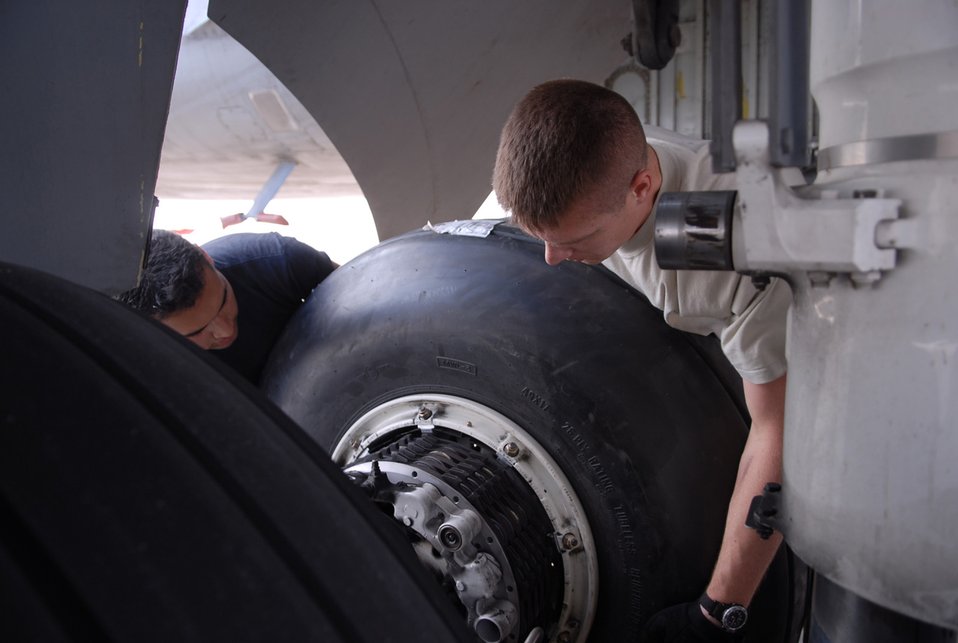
Tired

Staff Sgt. Ruben Mariscal and Staff Sgt. Frank Veres slide a new wheel on to a KC-135 Stratotanker Jan. 5 at a Southwest Asia air base. They are assigned to the 379th Expeditionary Aircraft Maintenance Squadron. Sergeant Mariscal is deployed from MacDill Air Force Base, Fla., and Sergeant Veres is deployed from Fairchild AFB, Wash.